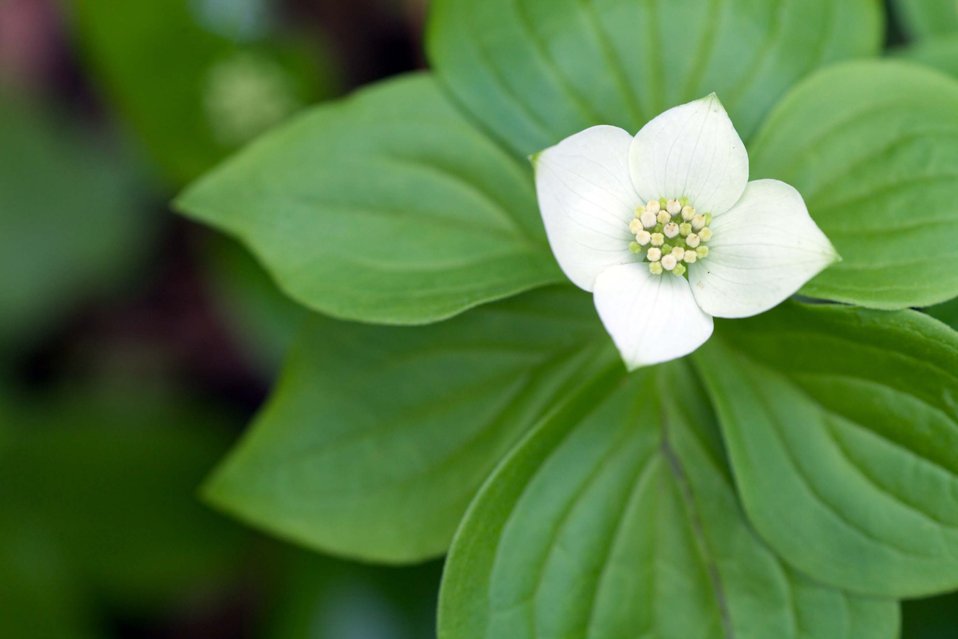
Bunchberry

Nulhegan Basin Division, Silvio O. Conte National Wildlife Refuge.